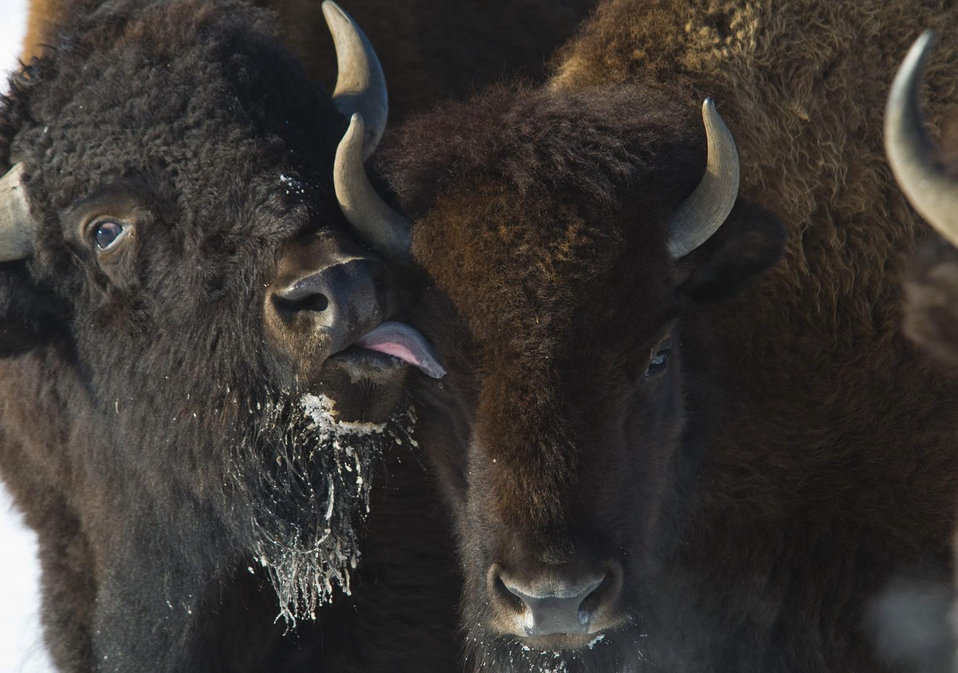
slurp

Two bison share a moment at Rocky Mountain Arsenal National Wildlife Refuge, CO